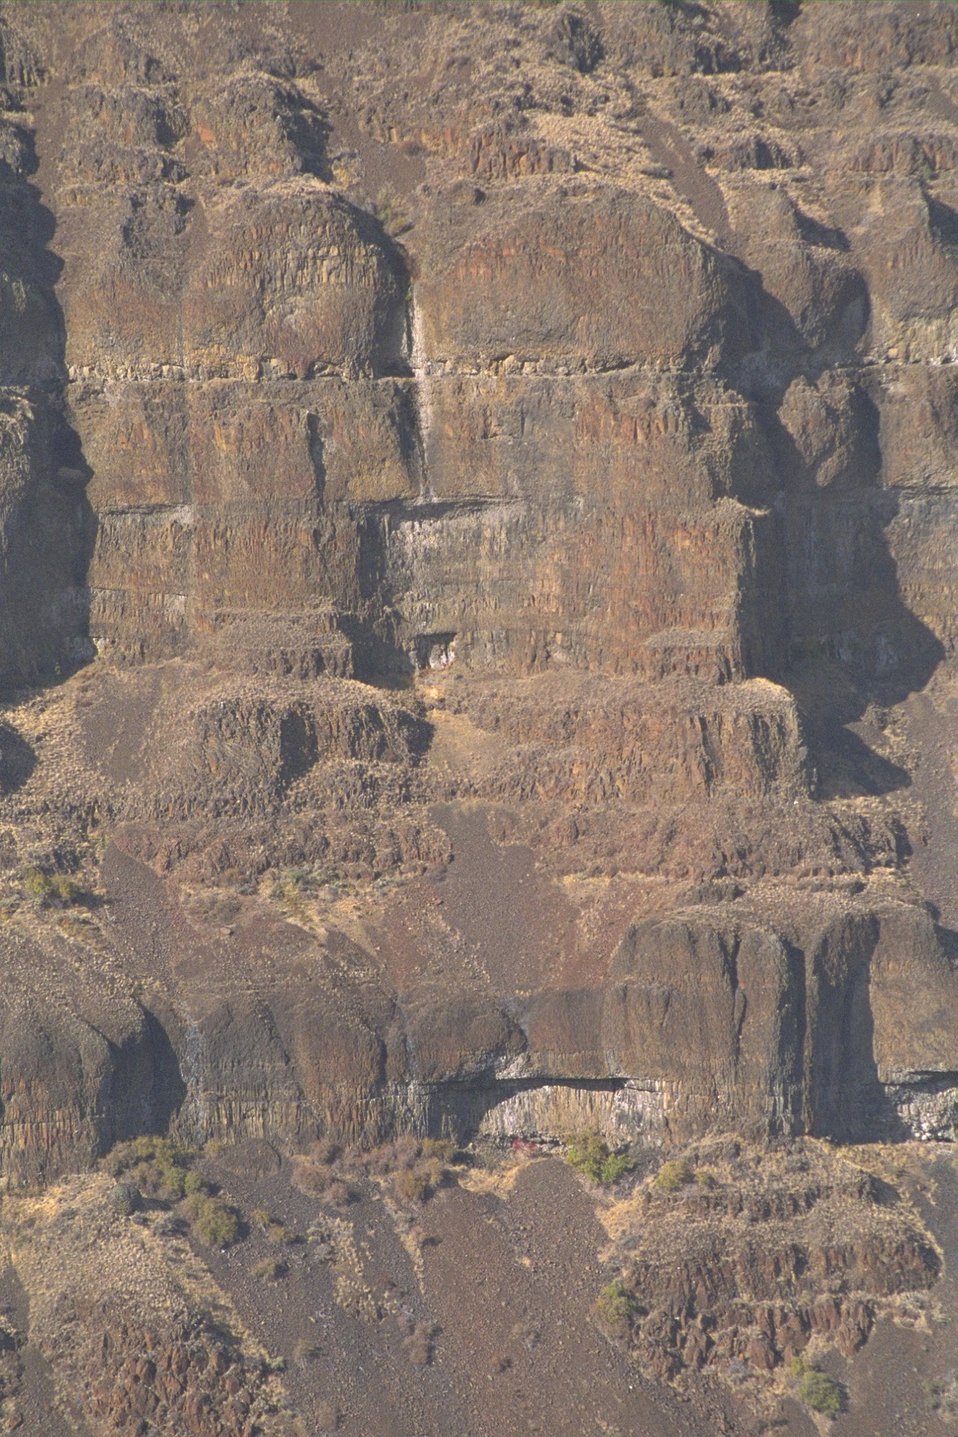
A close up picture of the verticle basalt cliffs along the John Day River.